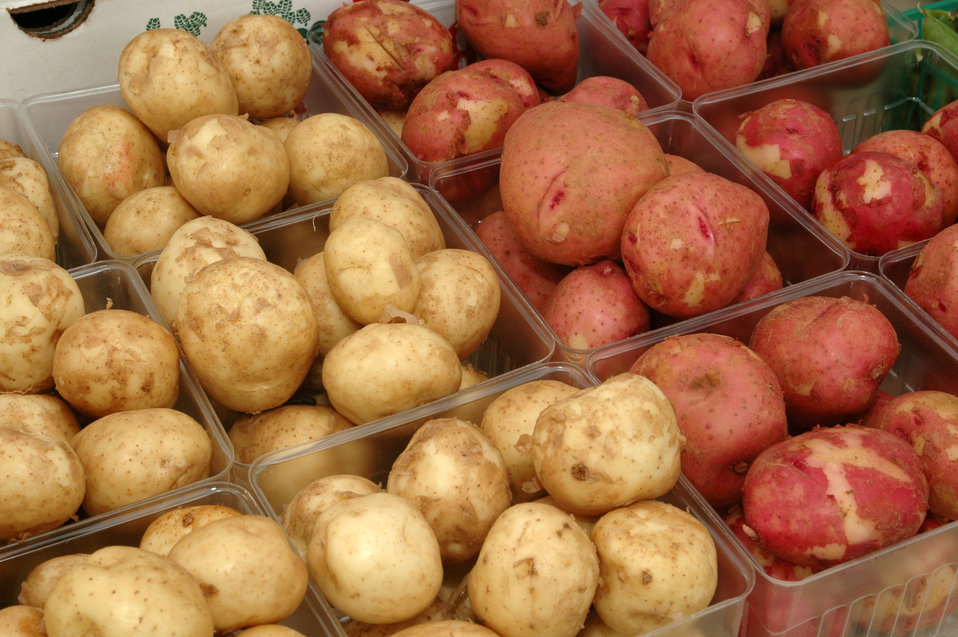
White and Red potatoes for sale at the U.S. Department of Agriculture (USDA) Farmer’s Market held in the East parking lot of USDA's Whitten Building in Washington, D.C. on June 2, 2006.